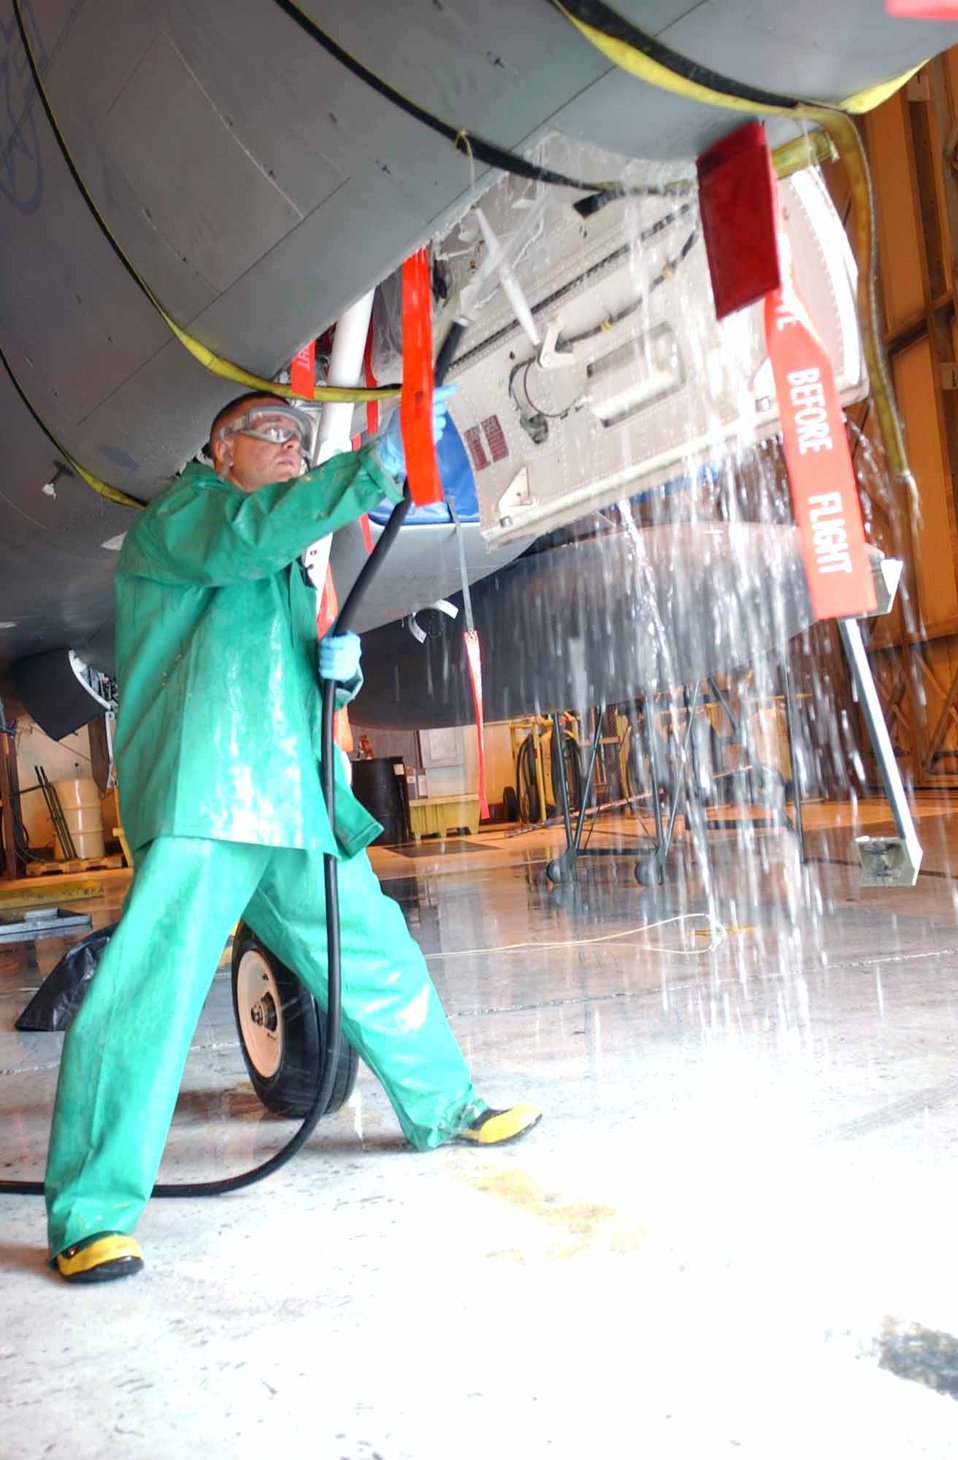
It's a wash

ELMENDORF AIR FORCE BASE, Alaska -- Staff Sgt. Michael Pilling washes an F-15 Eagle from the 19th Fighter Squadron here during Northern Edge '04. About 9,000 Soldiers, Sailors, Airmen, Marines and Coast Guardsmen are serving as part of a joint task force practicing tasks associated with joint operations.